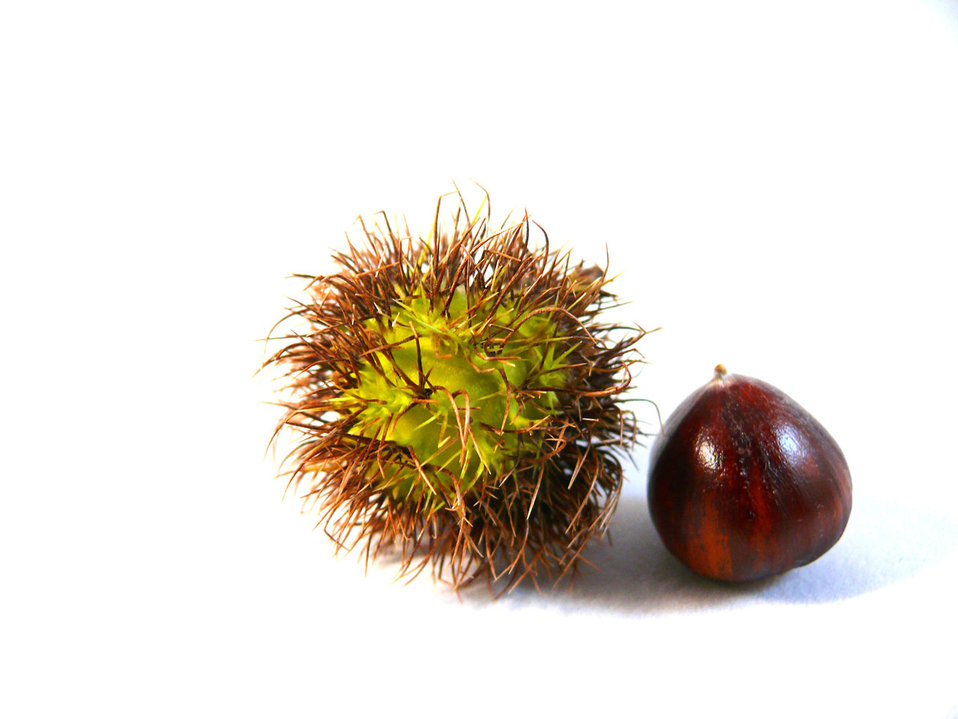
Nut on black backround.